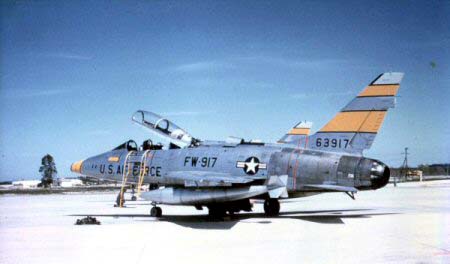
F-100F Super Sabre

A F-100 Super Sabre sits on the flightline at Homestead Air Force Base, Fla. The Super Sabre transferred to Aviano Air Base, Itlay, in 1994.